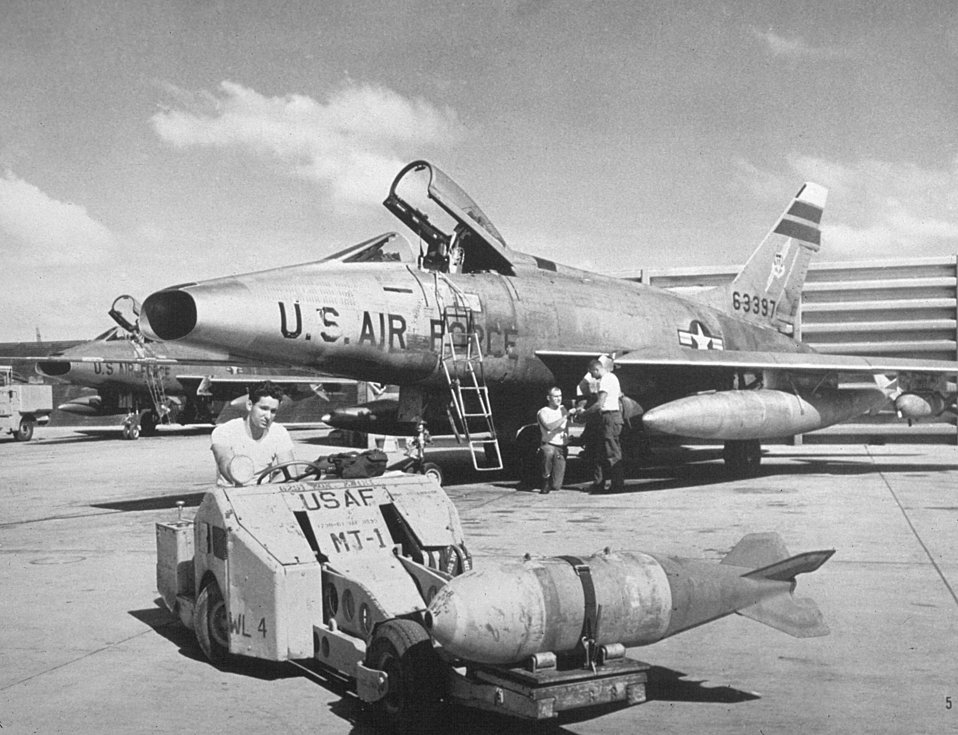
F-100 Super Sabre

A 1950s photo of a North American F-100 Super Sabre jet fighter aircraft on a tarmac.